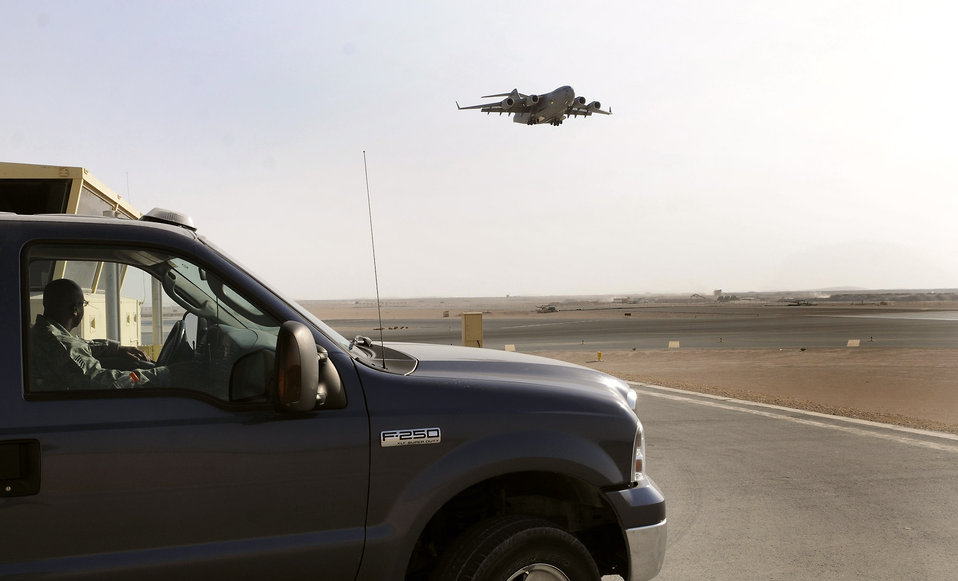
Keeping tabs on the airfield

Tech. Sgt. Antonio Cooper, deputy airfield manager assigned to the 379th Expeditionary Operations Support Squadron at an air base in Southwest Asia, observes a C-17 Globemaster III coming in for a landing Dec. 15. After the aircraft has landed, Sergeant Cooper inspects the runway for debris. The runway is checked at least once every two hours and more often when needed. Sergeant Cooper is a native of Stapleton, Ga., and is deployed from Patrick Air Force Base, Fla.